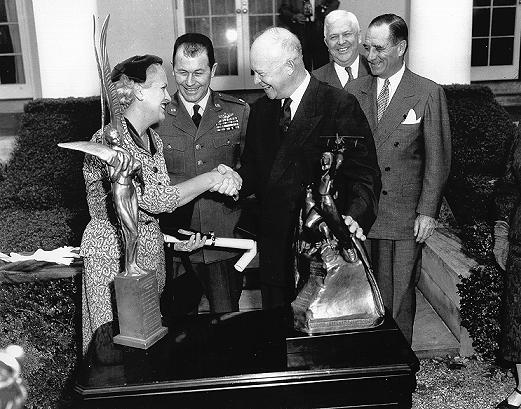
Jackie Cochran and Chuck Yeager being presented with the Harmon International Trophies by President Dwight D. Eisenhower.